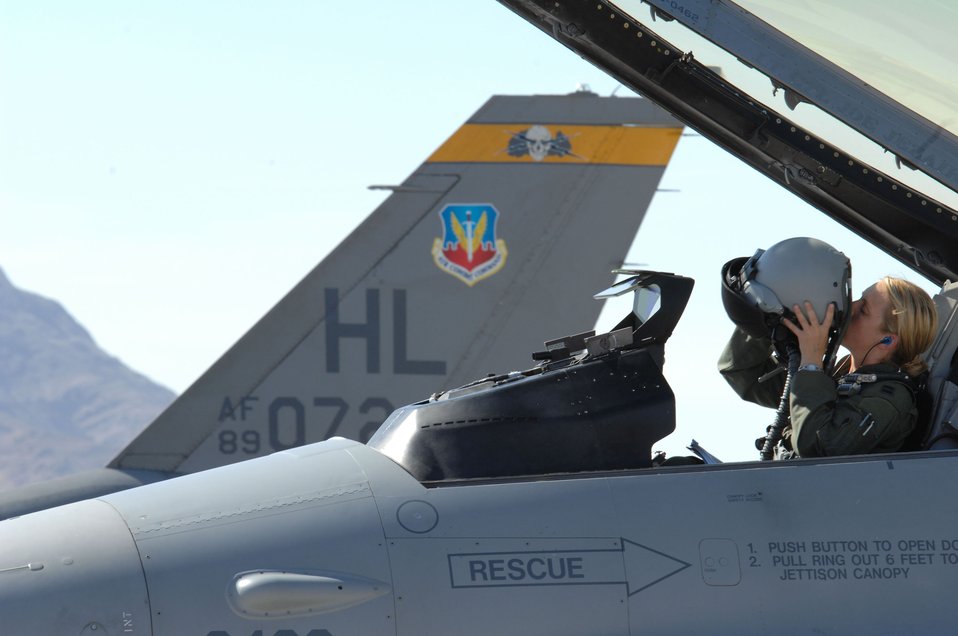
Preparing for flight

Capt. Jennifer Wade puts on her flight helmet July 22 before a training mission during Red Flag at Nellis Air Force Base, Nev. Capt. Wade is a F-16 Fighting Falcon pilot assigned to Hill AFB, Utah.